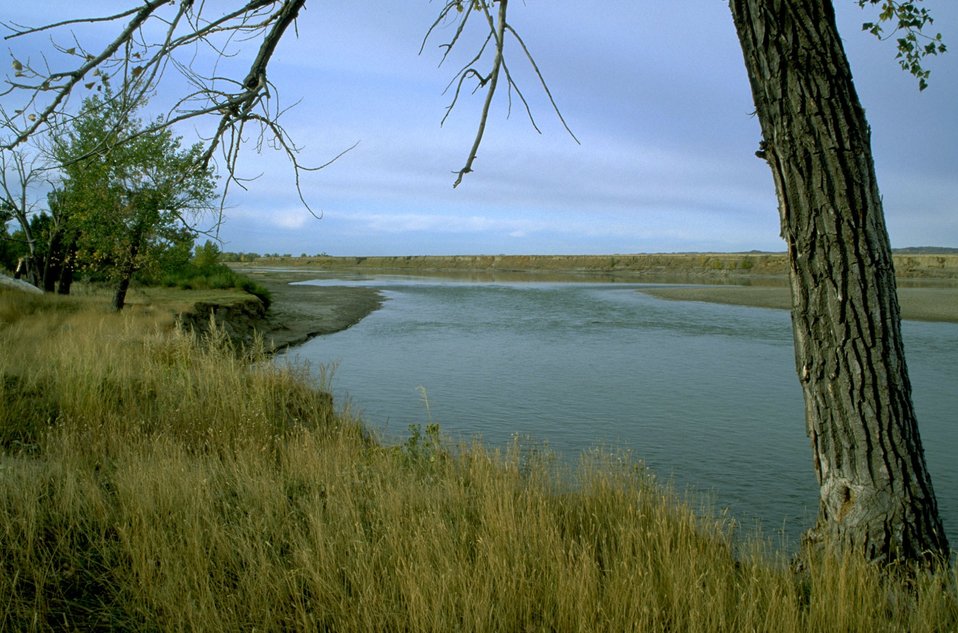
Grass and trees along the Yellowstone River